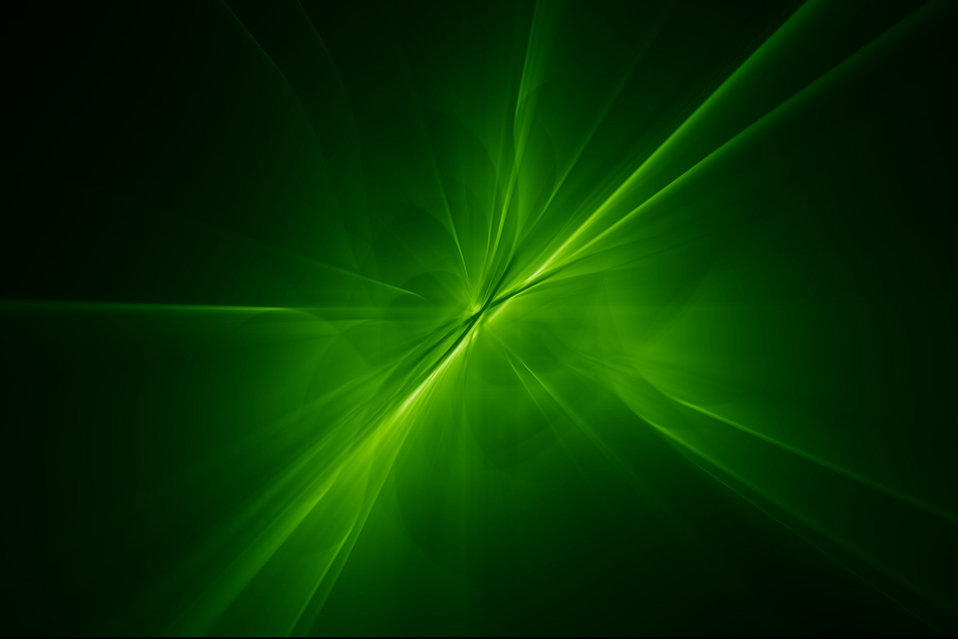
Abstract green background in high resolution.